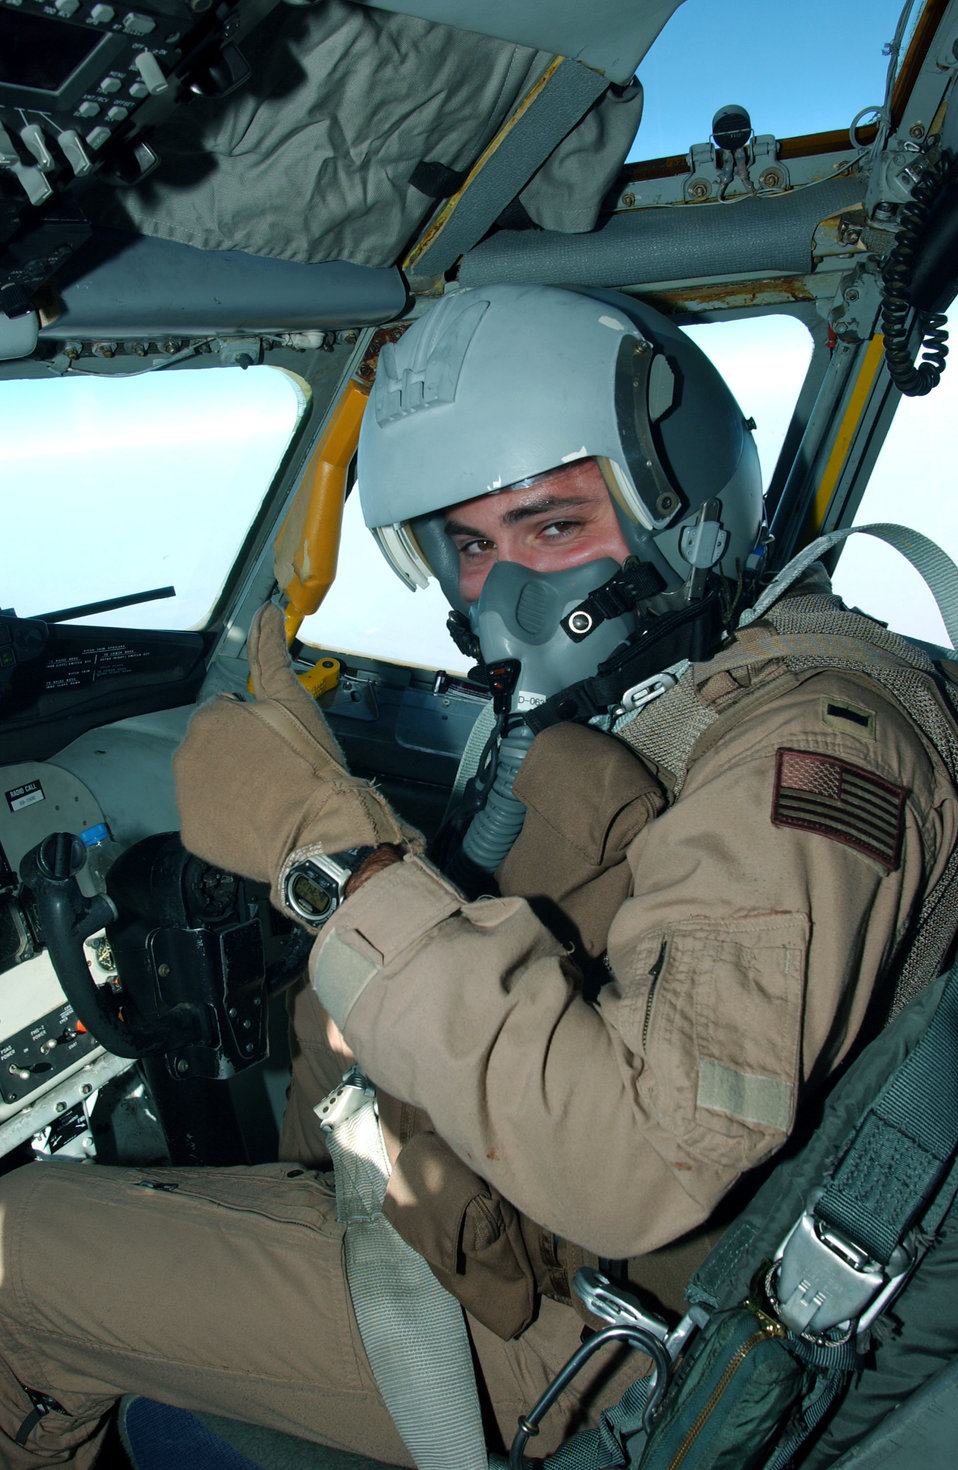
Thumbs up

OVER SOUTHWEST ASIA - 1st Lt. Crosby, a KC-135 Stratotanker co-pilot, gives a thumbs up during a refueling mission over Afghanistan. Lieutenant Crosby is assigned to the 908 Expeditionary Air Refueling Squadron at a forward deployed location.